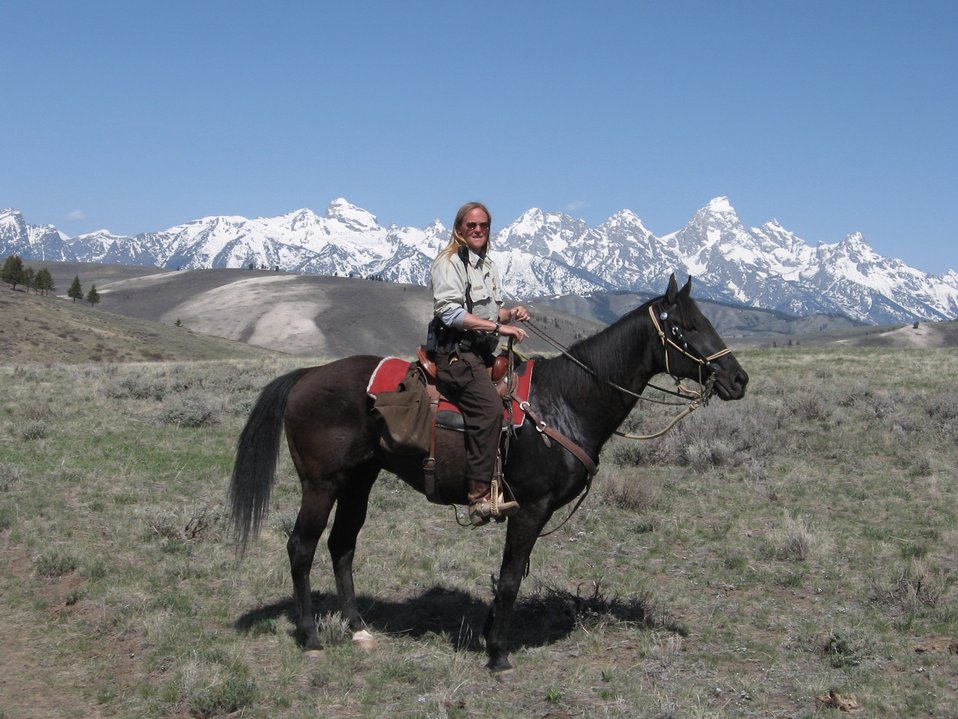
Officer Deb Goeb at National Elk Refuge

National Wildlife Refuge System Law Enforcement Officer Deb Goeb patrols on horseback during an annual detail at National Elk Refuge in Wyoming. Goeb, based at Charles M. Russell National Wildlife Refuge in Montana, was named 2011 Officer of the Year for the U.S. Fish and Wildlife Service’s Mountain-Prairie Region. (USFWS)